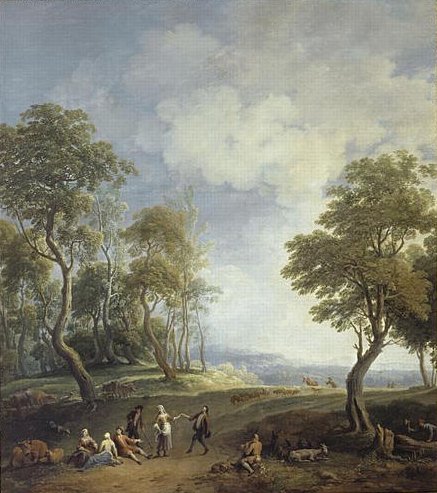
'Fete de Village', painting by Jan Joost van Cossiau